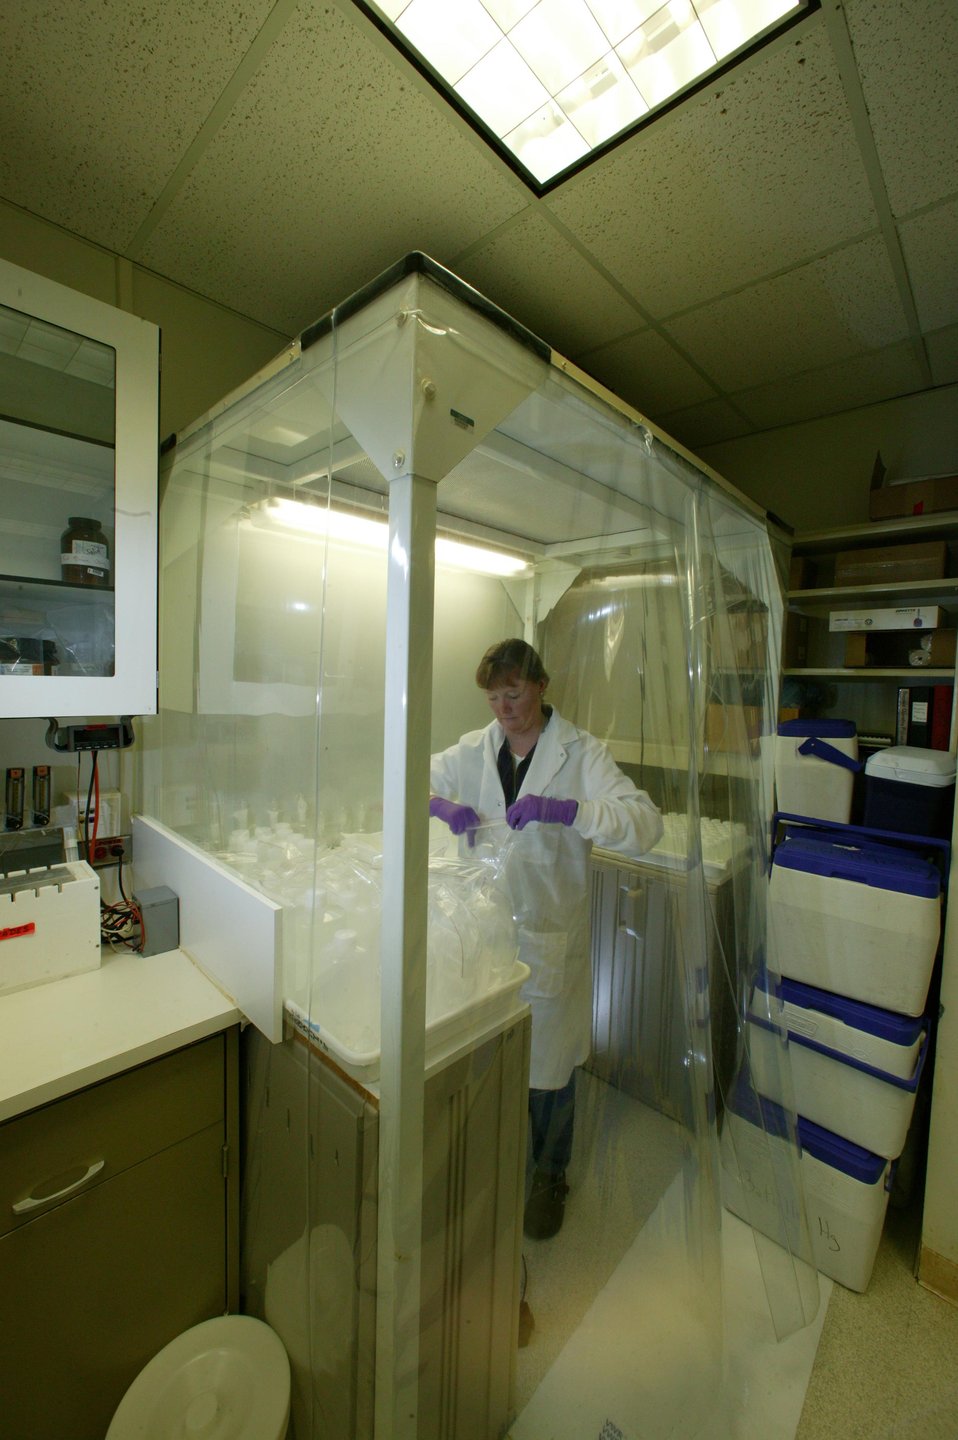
A SCIENTISTS AT WORK IN THE CLASS 100 CLEAN ROOM AT THE MARINE SCIENCES LABORATORY.

THE MSL AT THE PACIFIC NORTHWEST NATIONAL LABORATORY HAS A SPECIALIZED MERCURY ANALYSIS LABORATORY FOR ULTRA-TRACE LEVEL ANALYSIS OF MERCURY IN WATER SAMPLES. THE LABORATORY CONDUCTS STUDIES IN ECO-TOXICOLOGY, ANALYTICAL CHEMISTRY, WETLAND AND COASTAL ECOLOGY, FISHERIES, OCEAN PROCESSES, INSTRUMENTATION, REMOTE SENSING, RISK ASSESSMENT AND BIOTECHNOLOGY REMEDIATION.